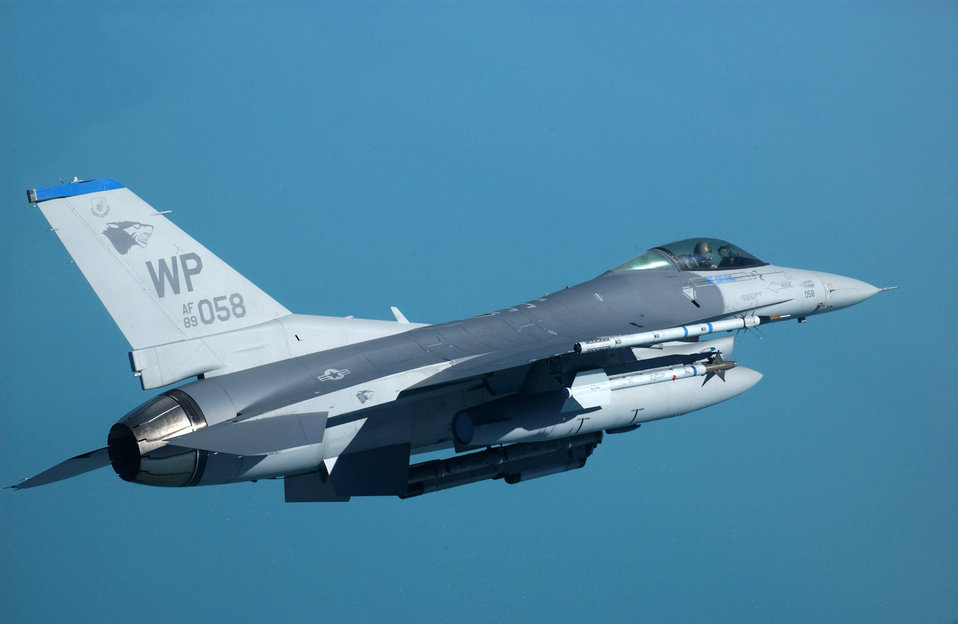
Kunsan Airman monitor North korea developemnts

An F-16 Fighting Falcon from the 8th Fighter Wing at Kunsan Air Base, South Korea, on patrol.